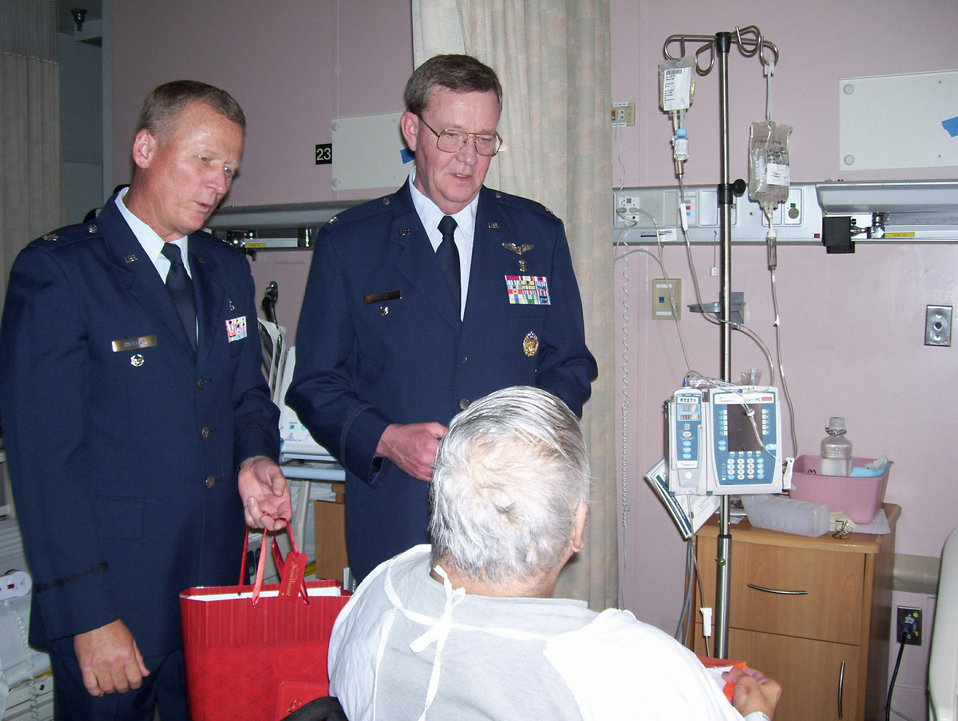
A heart-felt thank you

Lt. Col. John Hickman (left) and Col. Stephen Niles, senior leaders at Wilford Hall Medical Center at Lackland Air Force Base, Texas, visited with veterans Feb 13. at Audie L. Murphy Memorial Veterans Hospital, in San Antonio, as part of the annual Valentine's for Vets program. The salute to veterans is a time set aside to recognize the sacrifices veterans have made for their country and to increase community awareness of the medical centers' programs.